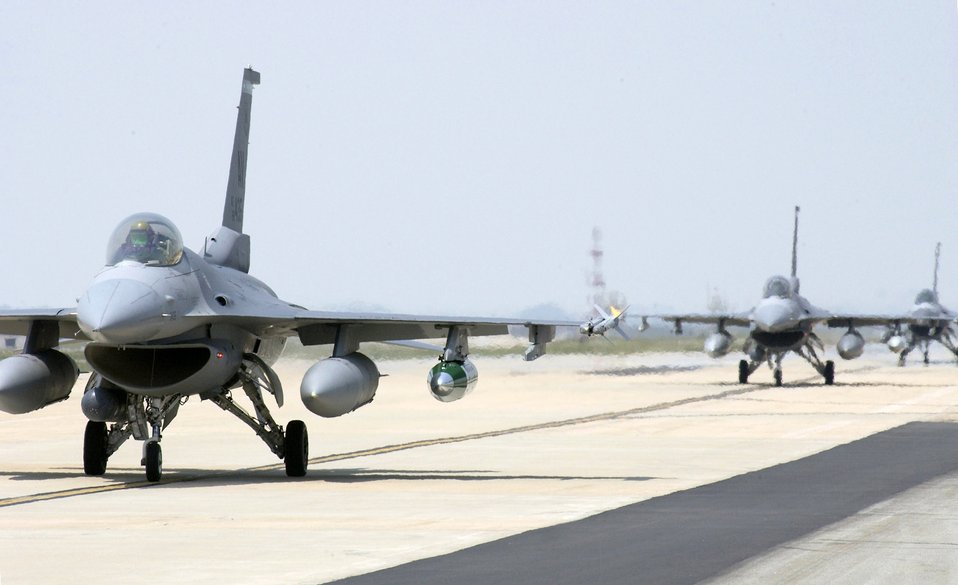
USAFE fighter squadron deploys to Kunsan

F-16 Fighting Falcons from the 555th Fighter Squadron from Aviano Air Base, Italy, arrive June 19 at Kunsan Air Base, South Korea. Airmen are here for a 120-day deployment. This is the first time a U.S. Air Forces in Europe fighter unit has deployed to a Pacific Air Force base.